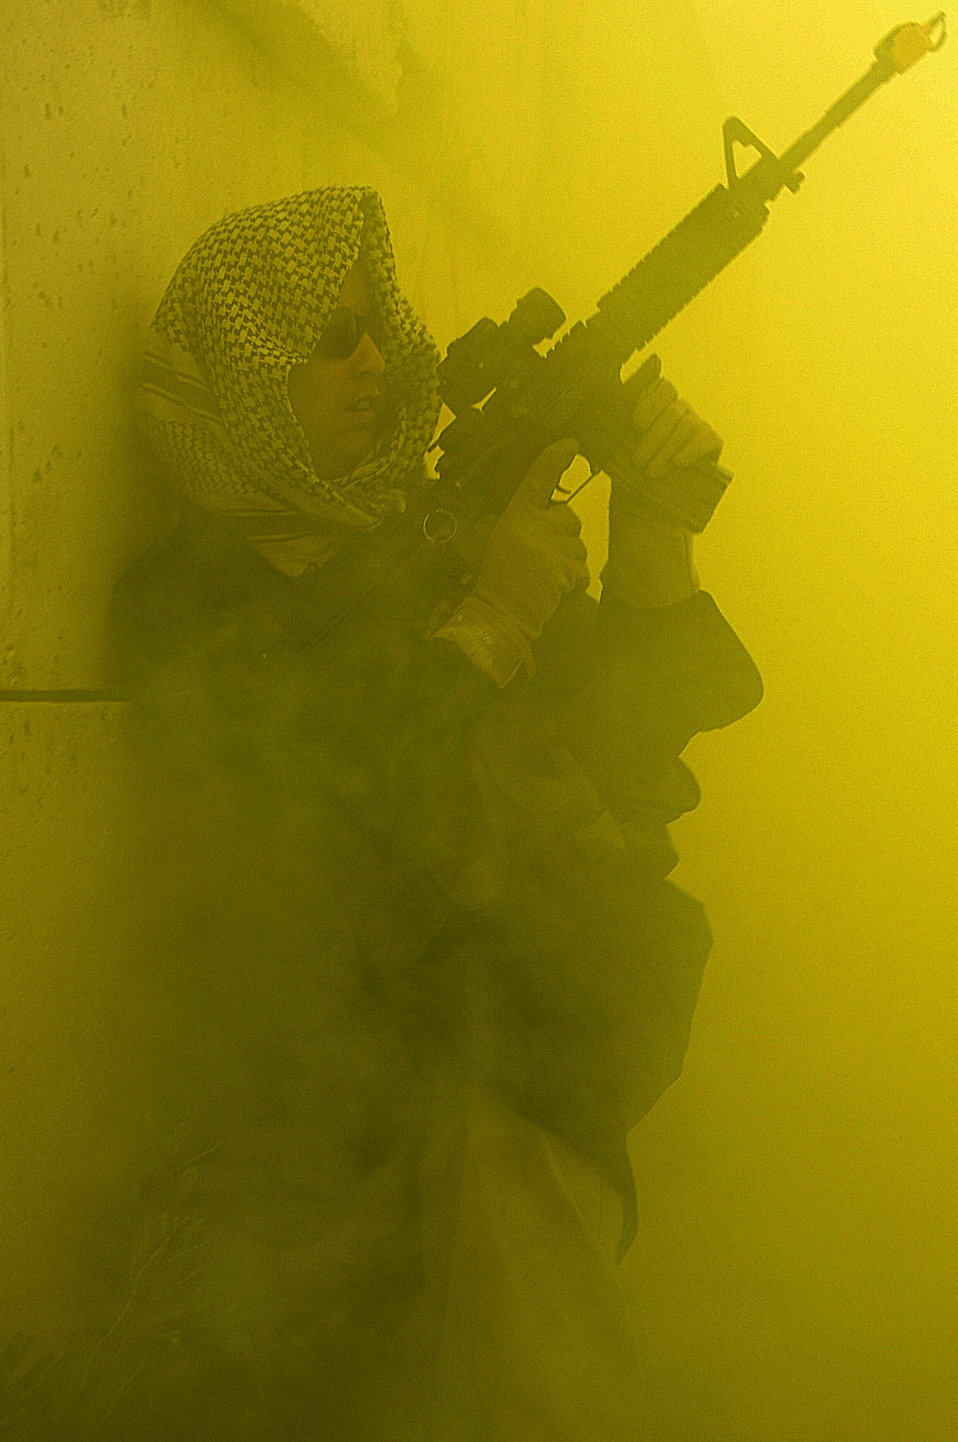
Atlantic Strike VII

A member of the opposing forces engages Soldiers, Airmen and Marines in simulated combat June 16 during Atlantic Strike VII at the Avon Park Air Ground training Complex, Avon Park, Fla. Atlantic Strike is a joint-forces training event involving joint terminal attack controllers from the Army, Air Force and Marines and is held semi-annually.